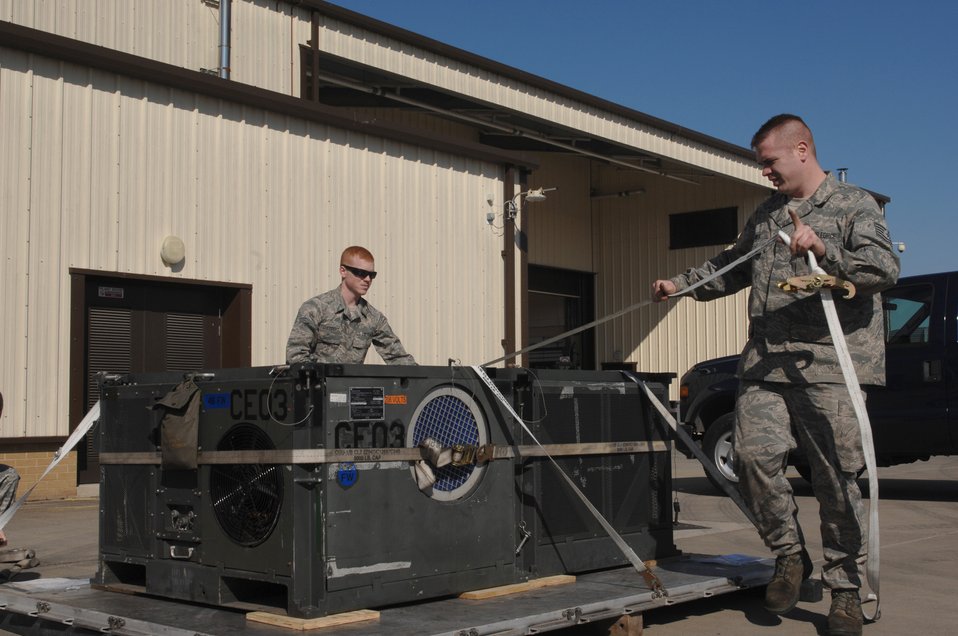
Odyssey Dawn

Tech. Sgt. Eric Ives, 48th Logistics Readiness Squadron, cargo team lead and Senior Airman Kevin Luebbert, 48th LRS, cargo team member, secures an air conditioning unit for deployment processing at RAF Lakenheath, England, March 19, 2011. Units from the 48th Fighter Wing are currently conducting pre-deployment procedures in support of Operation Odyssey Dawn. The 48th Fighter Wing provides all-weather, day or night air superiority and air-to-ground precision combat capability as well as combat search and rescue.